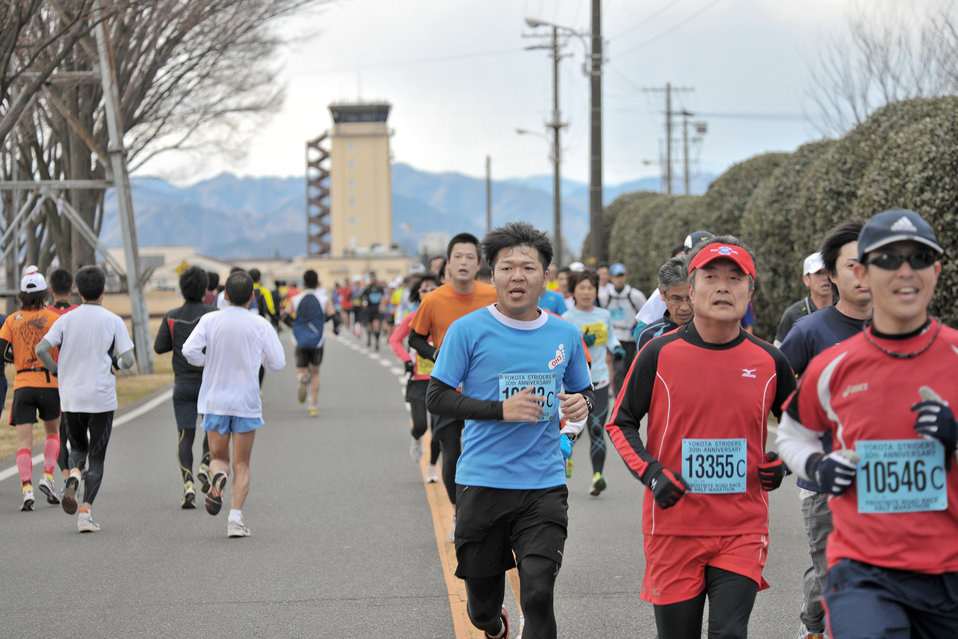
The 30th Annual Frostbite Road Race

Yokota Air Base Striders Running Club held the 30th Annual Frostbite Run Jan. 16, 2011, at Yokota Air Base. Yokota AB Airmen hosted 6,000 participants for a unique running experience.